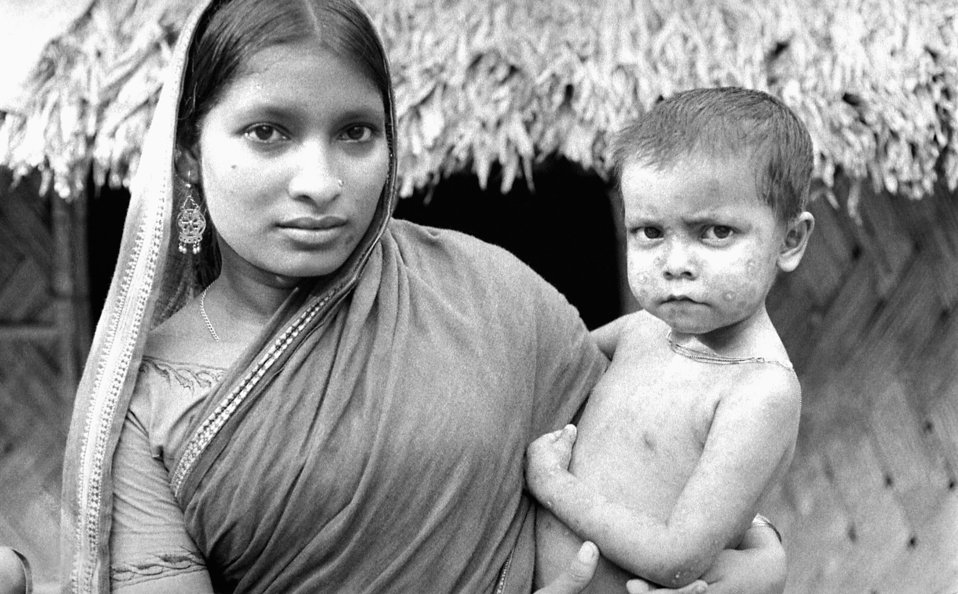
This mother was photographed as she held her child who bore the scars of having been a smallpox survivor. The distribution pattern of his scars is indicative of this viral disease, for it was most dense about his face and extremities, which was evident in this 1975 photograph.